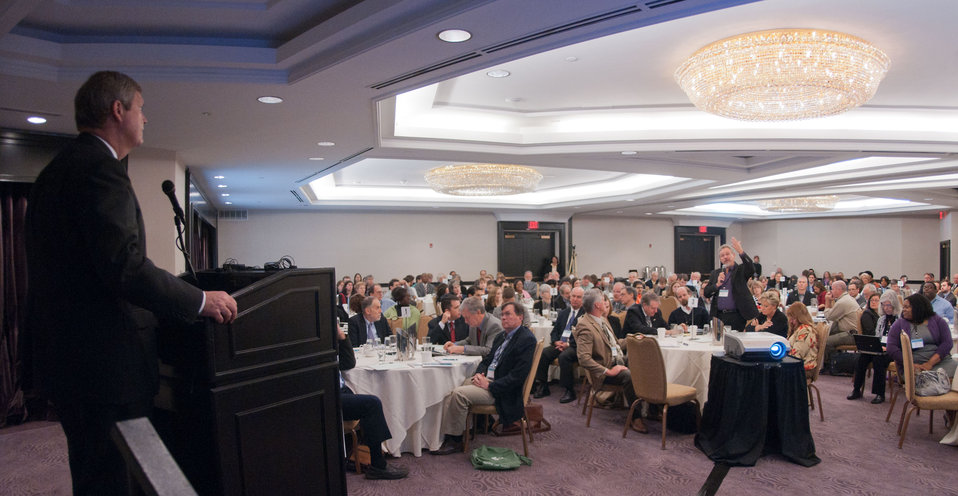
U.S. Department of Agriculture (USDA) Secretary Tom Vilsack responded to several questions following his keynote address to the Rural Wealth Creation and Livelihoods national conference for practitioners, researchers and policymakers, held at the Dupont Hotel, Washington DC, on Monday October 3, 2011. USDA partnered with the Ford Foundation to sponsor the conference.